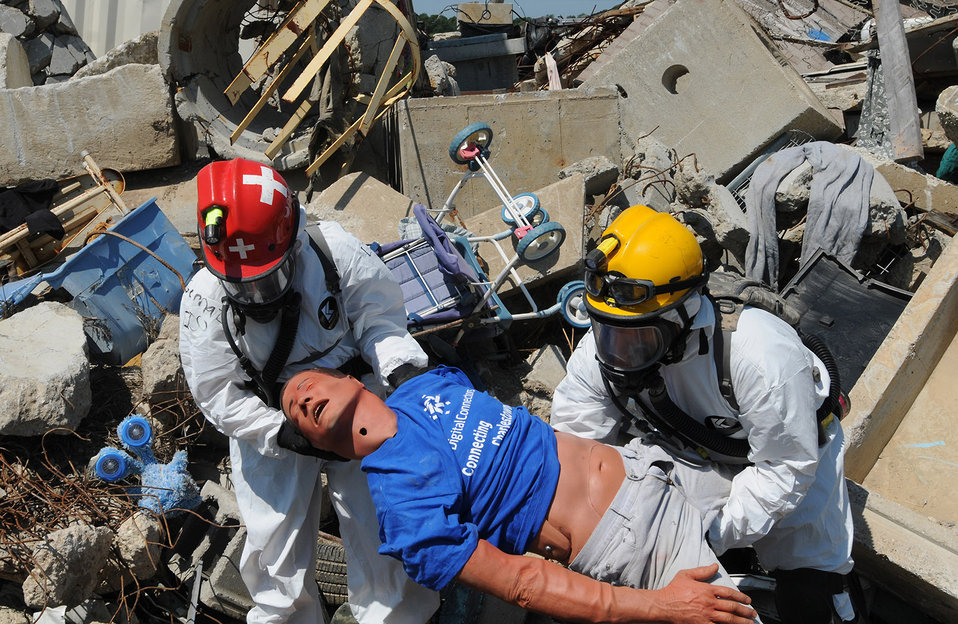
Vibrant Response 13

Joint search and extraction team members pull a simulated victim from the rubble at the Muscatatuck Urban Training Center at Camp Atterbury, Ind., July 27, 2012, during exercise Vibrant Response 13. Vibrant Response is a U.S. Northern Command-sponsored field training exercise for chemical, biological, radiological, nuclear and high-yield explosive consequence management forces designed to improve their ability to respond to catastrophic incidents.